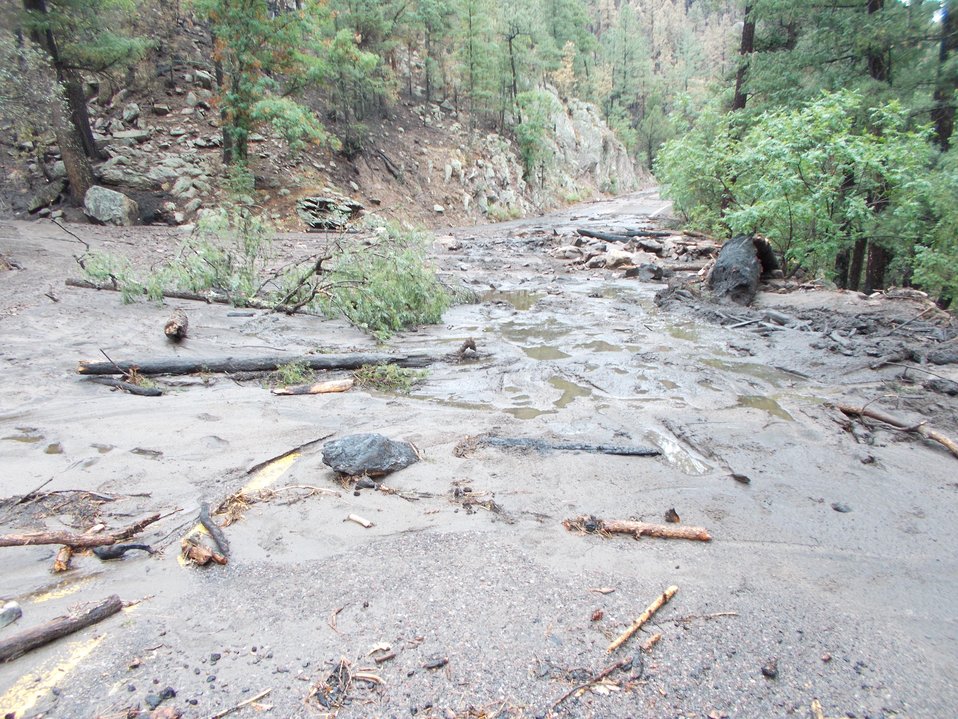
Debris is brought down to NM Hwy 152 after a thunderstorm due to the Silver Fire near Kingston, NM. The Silver Fire in Gila National Forest near Kingston, NM began on Jun. 7, 2013 by a lightning strike, has burned an estimated 138,705 acres and is 85% contained.